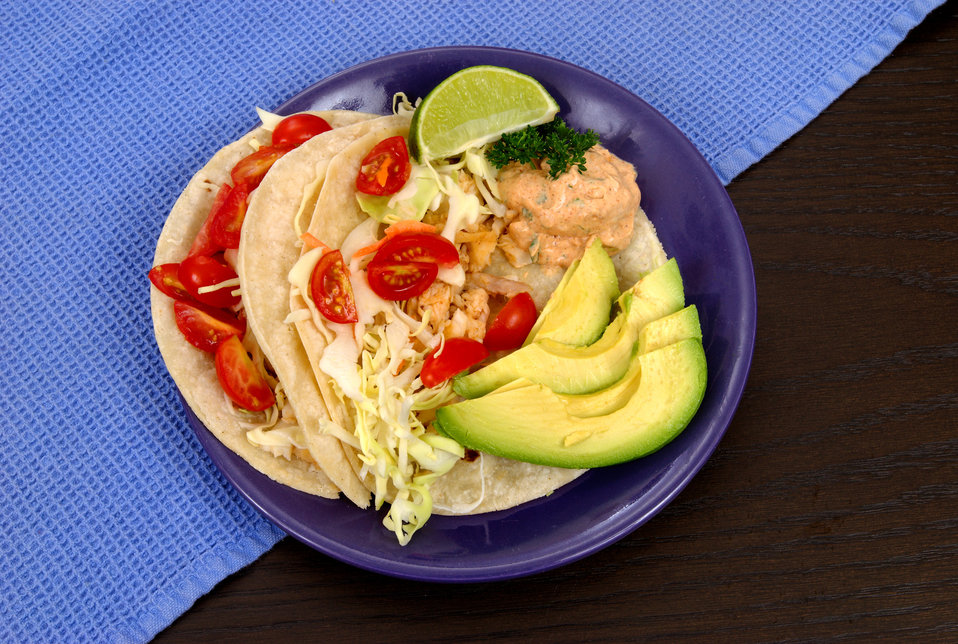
This colorful plate contains a meal of Simple Fish Tacos. The recipe, which can be accessed using the link below, calls for nonfat sour cream, fat-free mayonnaise, chopped cilantro, low-sodium taco seasoning, a pound of cod or white fish fillets, olive oil, lemon juice, red and green cabbage, diced tomatoes, warmed corn tortillas, and lime wedges. Note how low-sodium, and low-fat ingredients can be used to create a delicious meal.